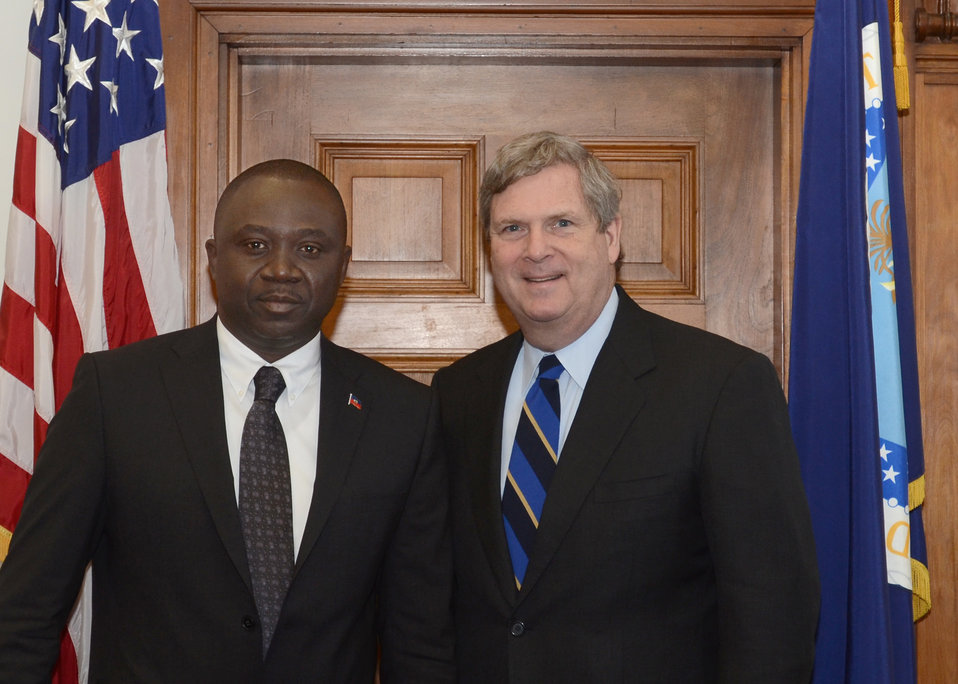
Agriculture Secretary Tom Vilsack meets with Haiti’s Minister of Agriculture, Natural Resources and Rural Development Thomas Jacques who outlined his three year strategic plan for revitalization of the Haitian agriculture sector at the U.S. Department of Agriculture in Washington, D.C. on Monday, Mar. 4, 2013.